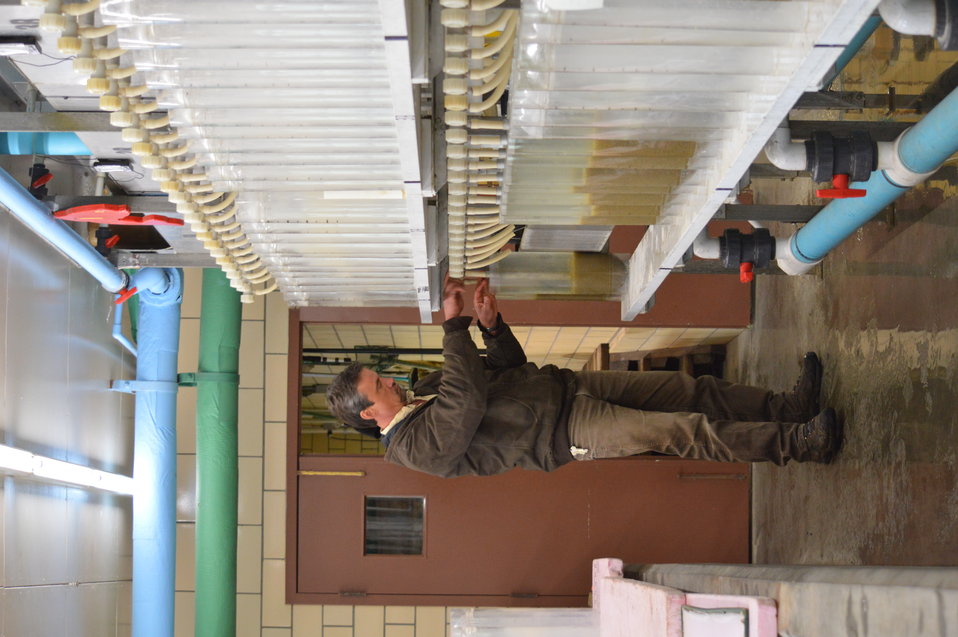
Service employee tends to upwelling jars

Garrison Dam National Fish Hatchery in North Dakota.